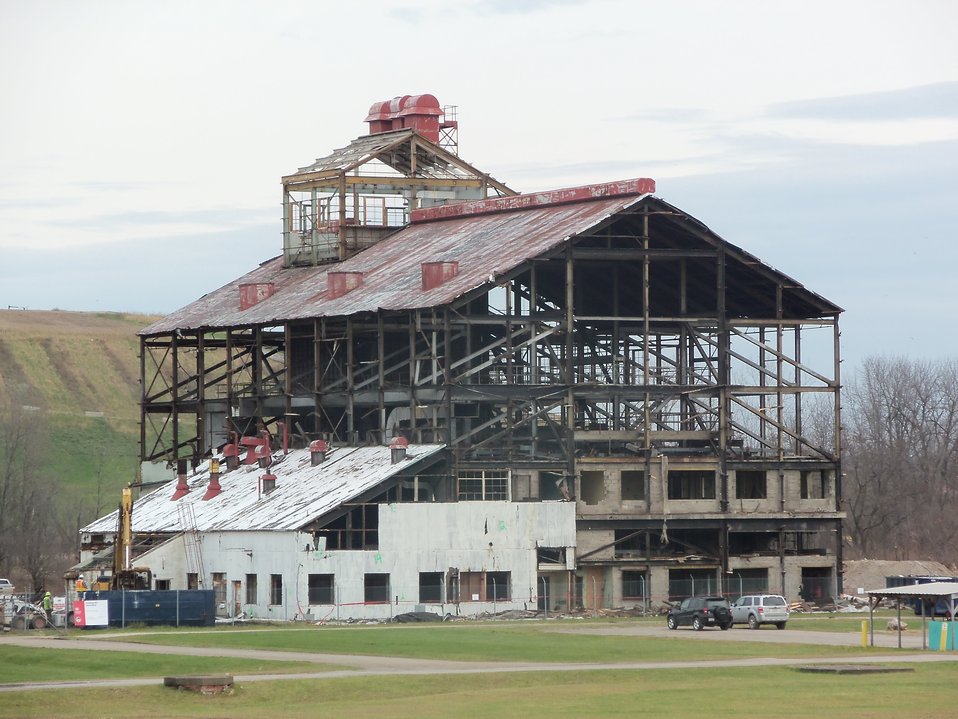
Building 401 deconstruction of shell.

Activities from the Niagara Falls Storage Site, which is associated with the former Lake Ontario Ordnance Works. Formerly Utilized Sites Remedial Action Program (FUSRAP), a program initiated in 1974 to identify, investigate and clean up or control sites that were part of the Nation's early atomic energy and weapons program. Activities at the sites that are eligible for FUSRAP were conducted by Manhattan Engineer District (MED) or the Atomic Energy Commission (AEC), both predecessors of the Department of Energy (DOE). The U.S. Army Corps of Engineers was assigned management of FUSRAP by Congress in 1997.